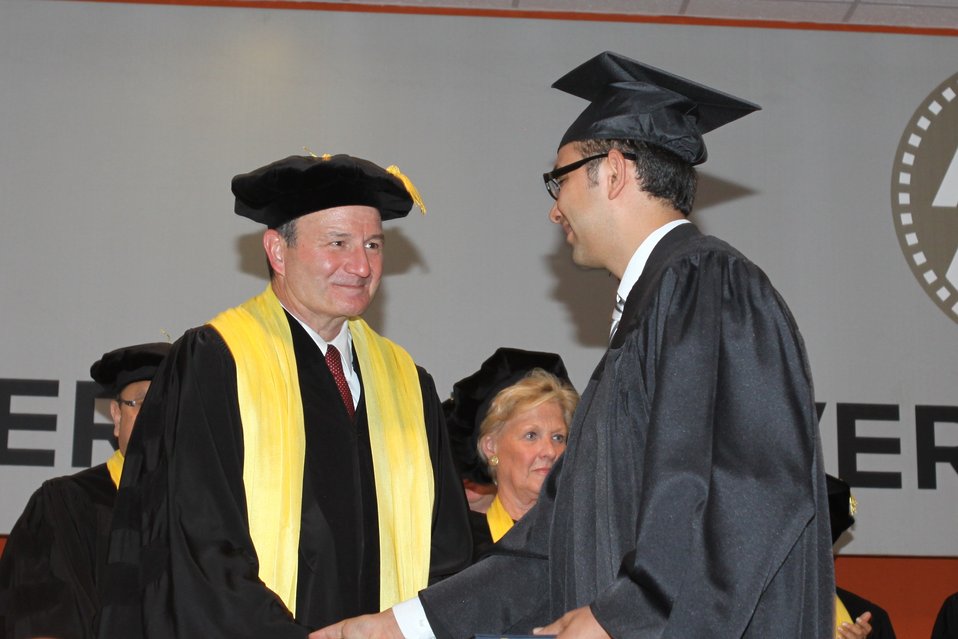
100526 AUAF Graduation 271